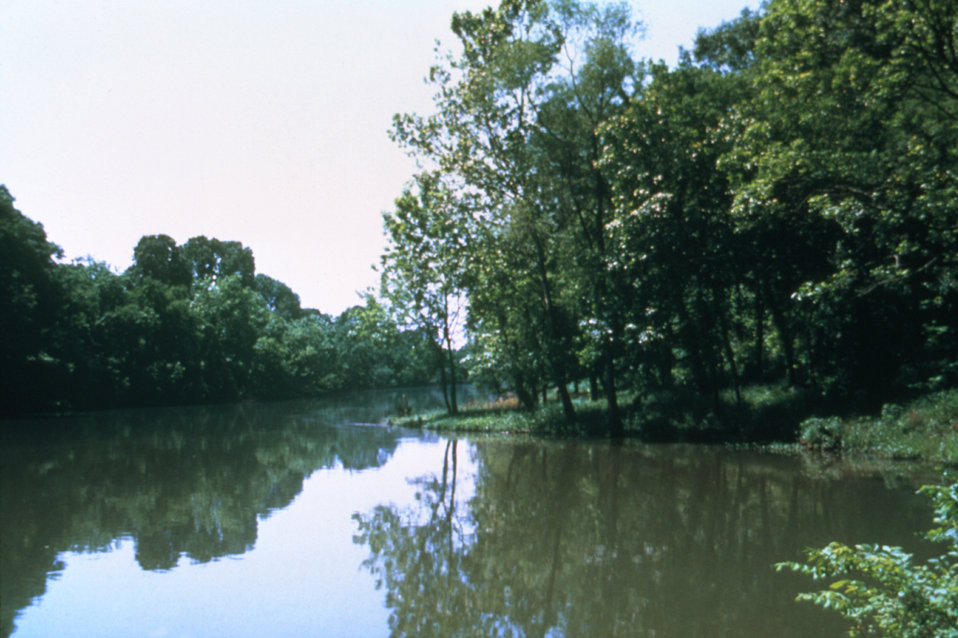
This is a 1981 photograph showing a stream in Alabama where fish were discovered to be contaminated with the insecticide DDT.